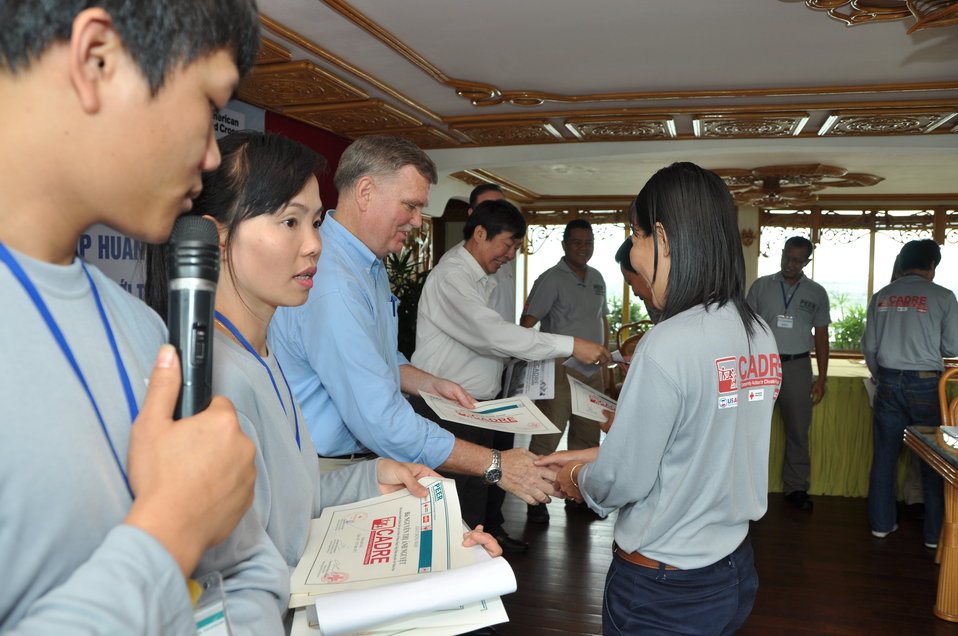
USAID Program Officer Director Michael Foster awards certificates to Red Cross workers.